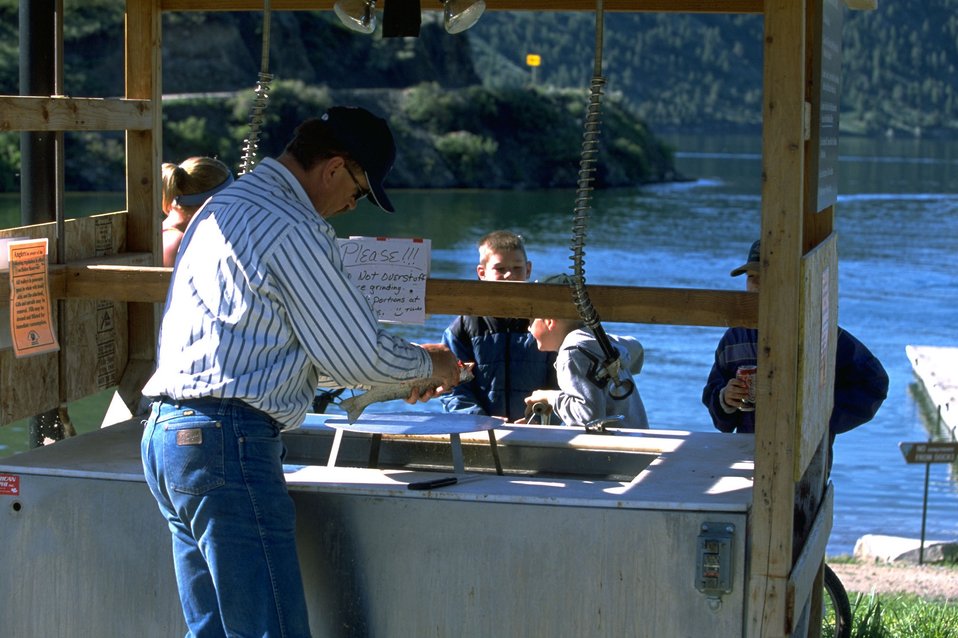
Fish cleaning station at Log Gulch Campground at Holter Lake